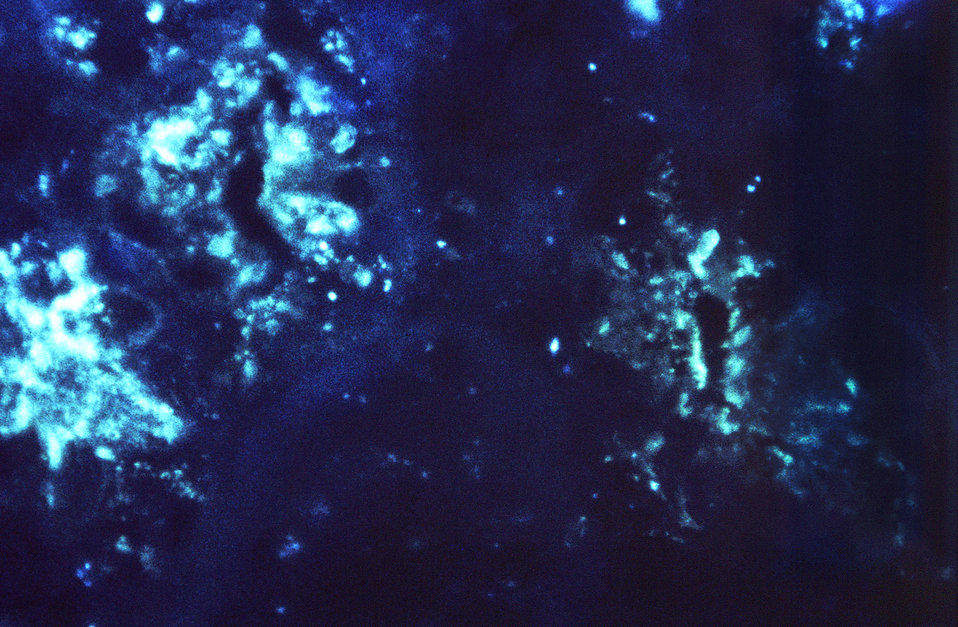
Using a direct fluorescent antibody (DFA) stain, this photomicrograph revealed the presence of rabies viral antigen in a tissue sample harvested from a fox's mandibular salivary gland, suspected of being infected with rabies.